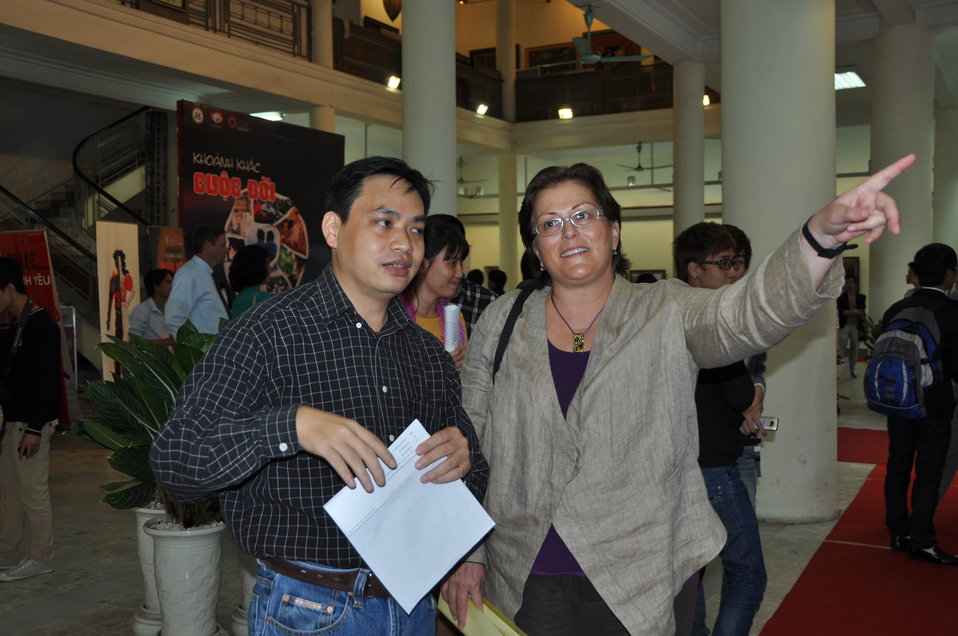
Moments in Life Exhibit: PEPFAR

U.S. Embassy Deputy Chief of Mission Claire Pierangelo visits the opening of the photo exhibit in Hanoi.